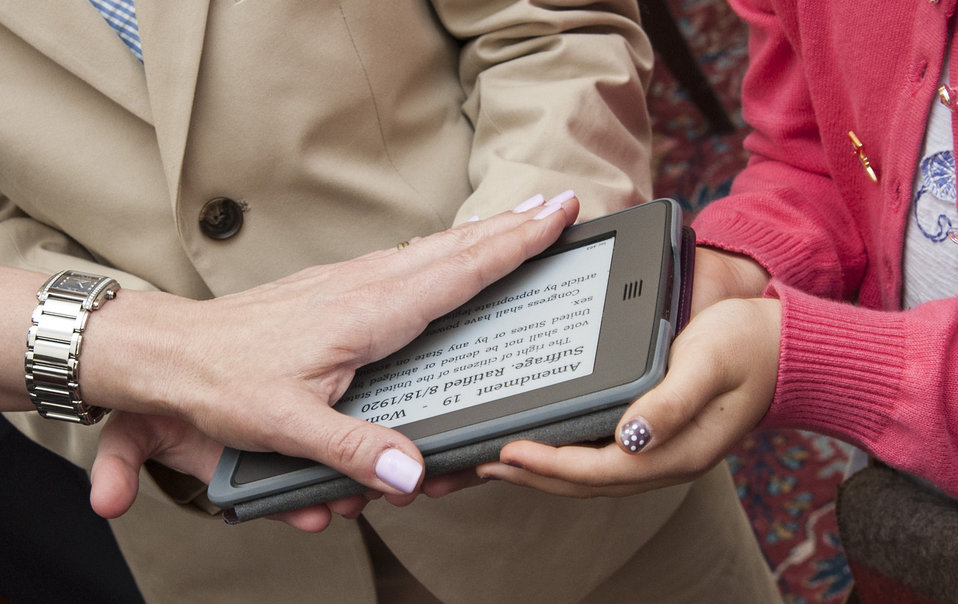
Vice President Biden swears in Suzi LeVine as the U.S. Ambassador to Switzerland and Liechtenstein

Vice President Joe Biden swears in Suzi LeVine as the U.S. Ambassador to Switzerland and Liechtenstein at the Executive Office Building in Washington, D.C., on May 30, 2014. Honoring American innovation and entrepreneurship, Ambassdor LeVine becomes the first American Ambassador to take take the oath over an electronic device.